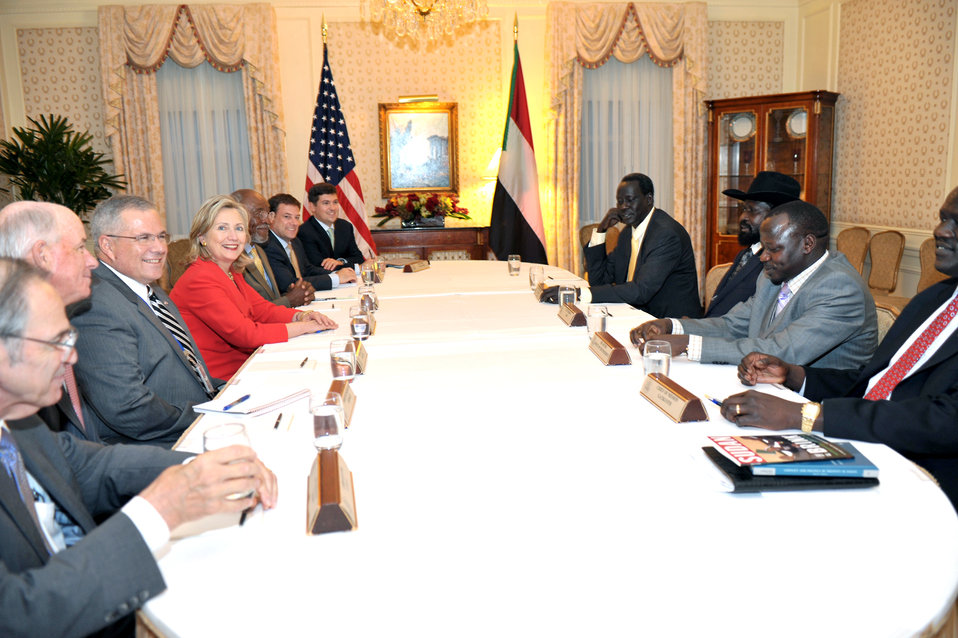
Secretary Clinton Holds a Bilateral With Sudanese Vice President Kiir

U.S. Secretary of State Hillary Rodham Clinton holds a bilateral meeting with Sudanese Vice President Kiir at the Waldorf-Astoria in New York, New York, on September 22, 2010.